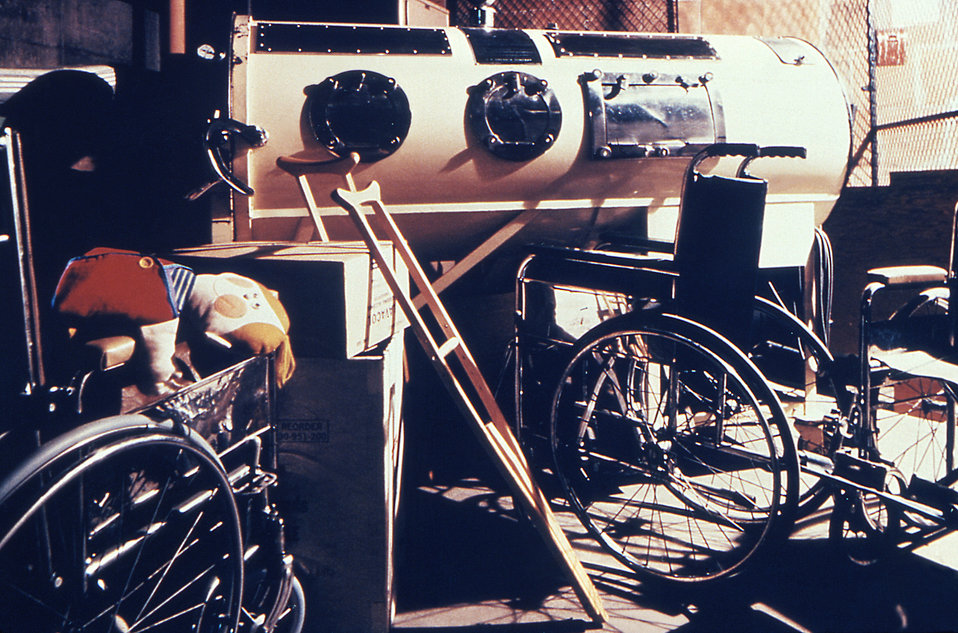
Aids used by polio victims.